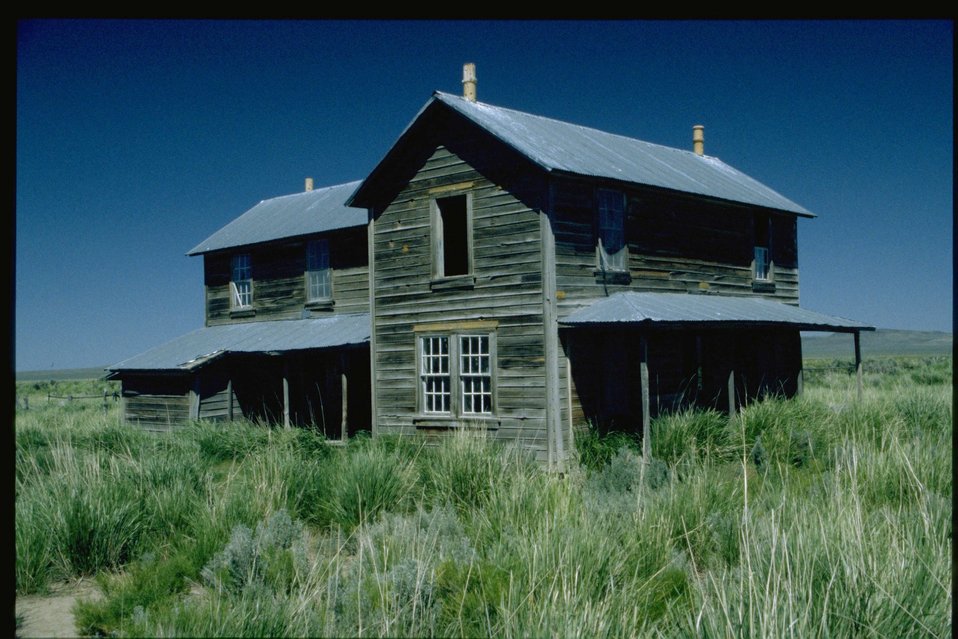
Shirk Ranch.